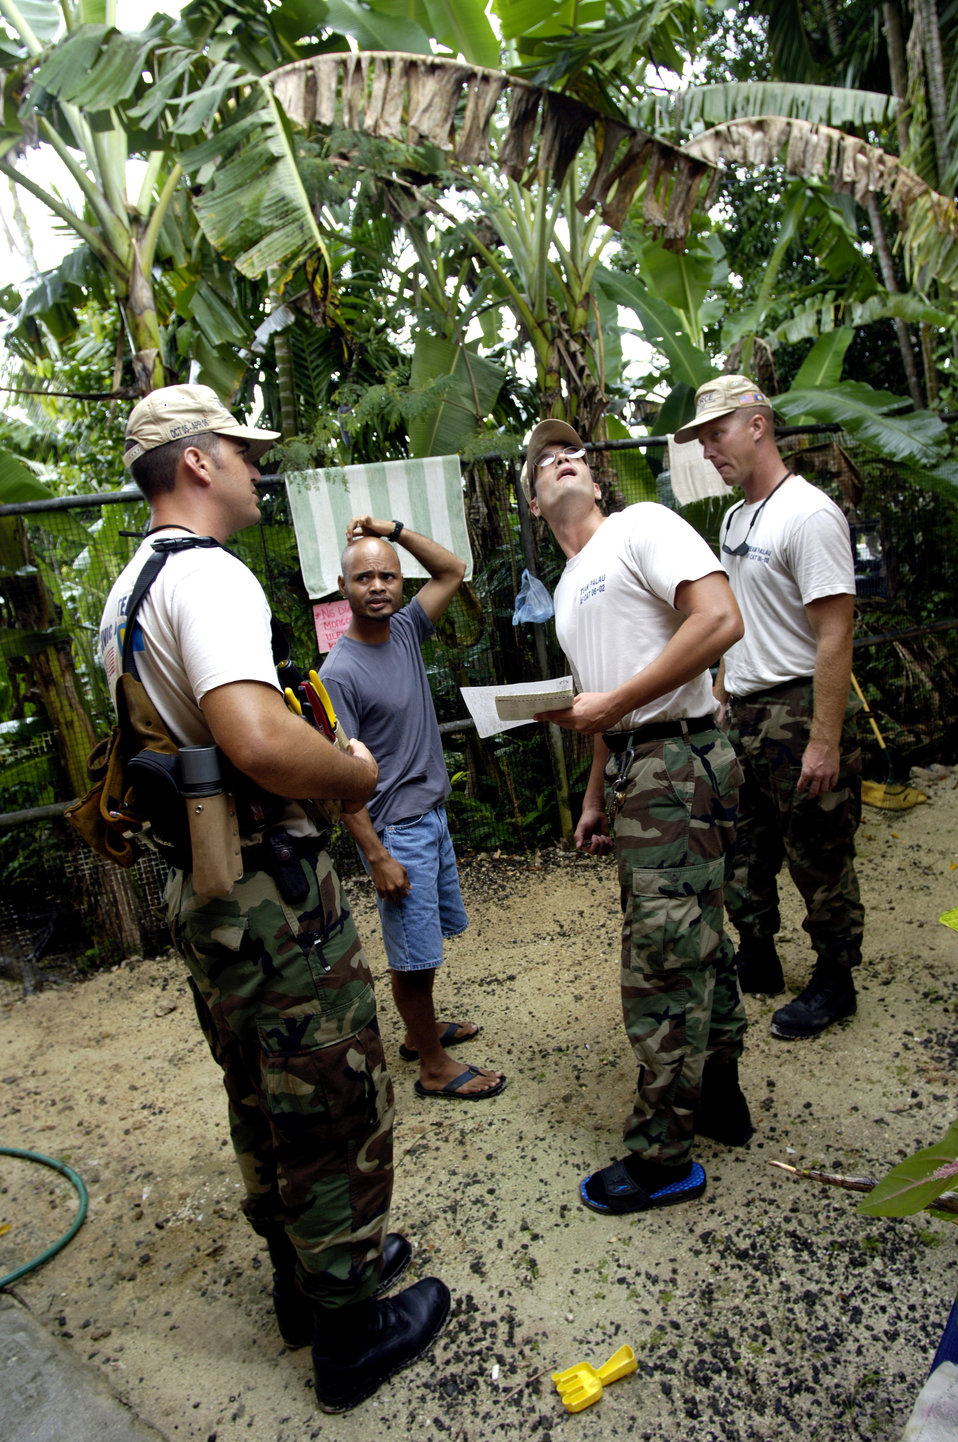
Taking Action

BABLEDAOB, Palau (AFPN) -- Tech. Sgts. Jamie Pahukoa, Dave Vinatieri and Mike Luhmann discuss an upcoming project with a Palauan during a visit to a Head Start program facility. The three are from the Palau civic action team. The mission of the program is twofold. It aids host nations in their basic infrastructure development and provides a favorable U.S. military presence through community construction, apprentice training, a medical civic action program and community relations.